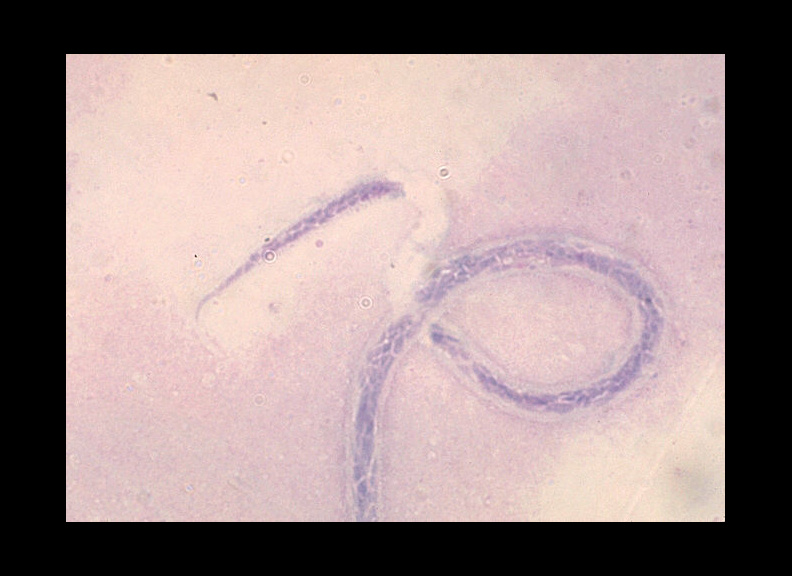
Mansonella ozzardi, the agent of filariasis; posterior end.